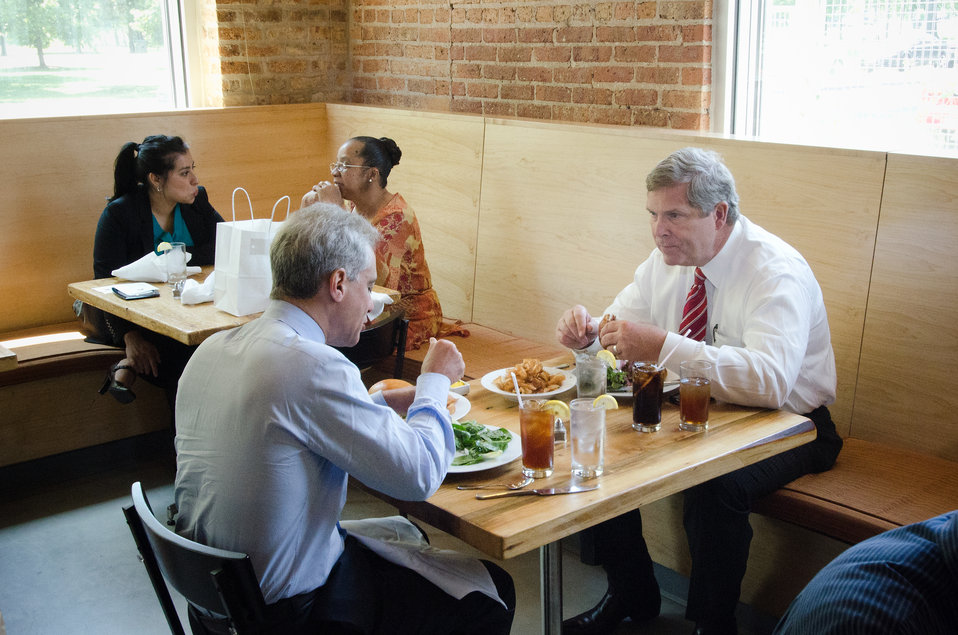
Chicago Mayor Rahm Emanuel (left) and Agriculture Secretary Tom Vilsack (right) enjoy lunch at Inspiration Kitchens a social enterprise restaurant in Chicago, Illinois, on Friday June 8, 2012, after touring a Fresh Moves Mobile Market Bus, a renovated Chicago Transit Authority Bus that delivers fresh, affordable fruits and vegetables to two neighborhoods with limited access to fresh produce. The food at Inspiration Kitchens is prepared and served by students and graduates in a food service training program. Inspiration Kitchens offers career services, employment preparation training, tuition subsidies, employer outreach, and job placement and retention services throughout the Chicago area.